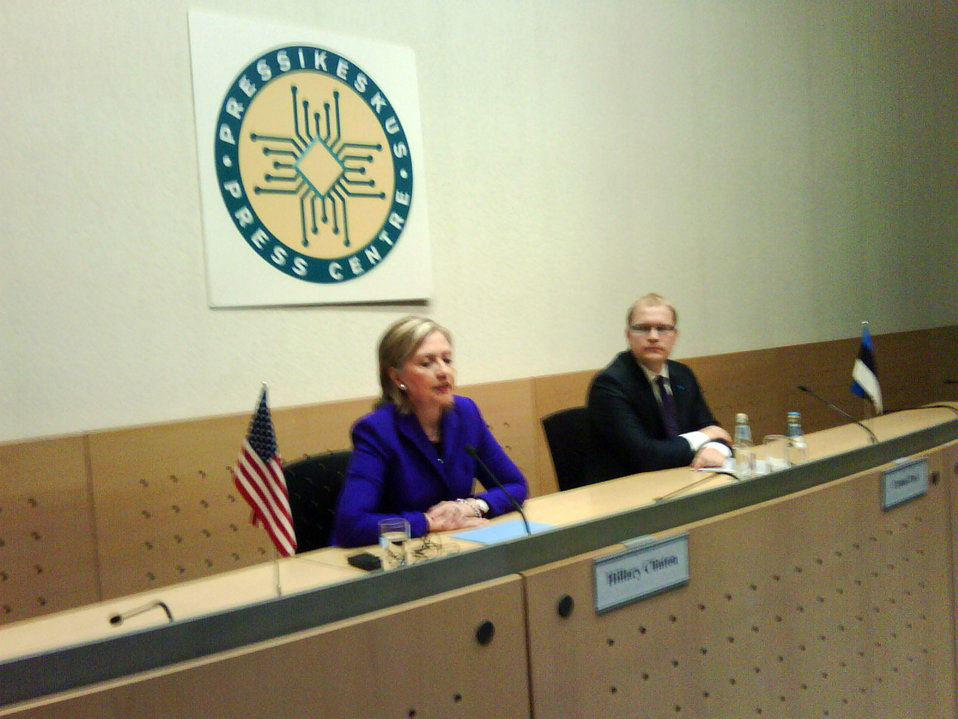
Secretary Clinton Meets With Estonian Foreign Minister

U.S. Secretary of State Hillary Rodham Clinton meets with Estonian Foreign Minister Urmas Paet in Tallinn, Estonia, April 22, 2010.